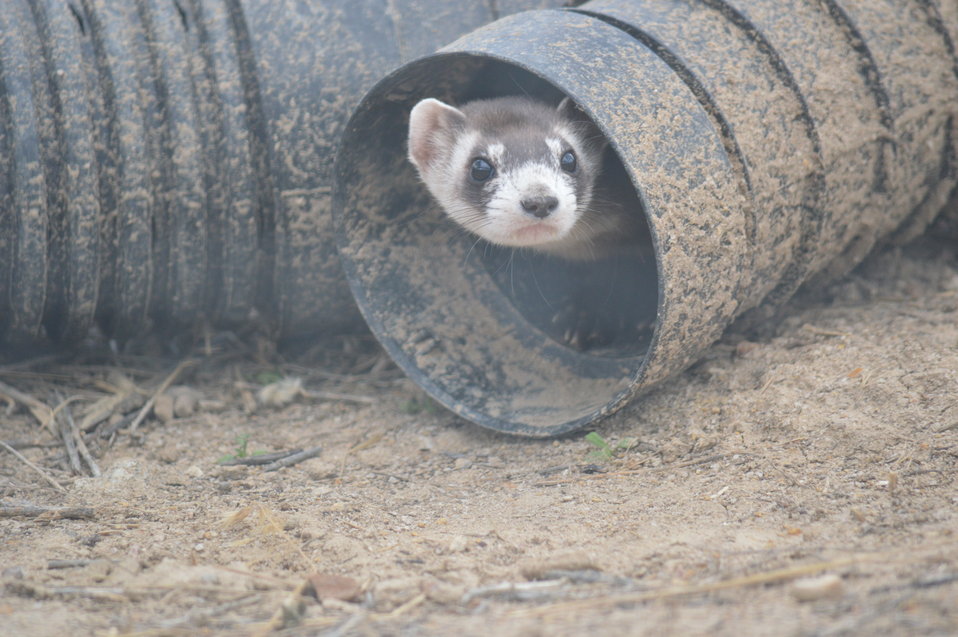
Interns visit the NBFFCC

In the summer of 2012, USFWS Region 6 interns visited the National Black-footed Ferret Conservation Center (NBFFCC) in Colorado to learn how the program reintroduces the endangered Black-footed ferret back into its native habitat.